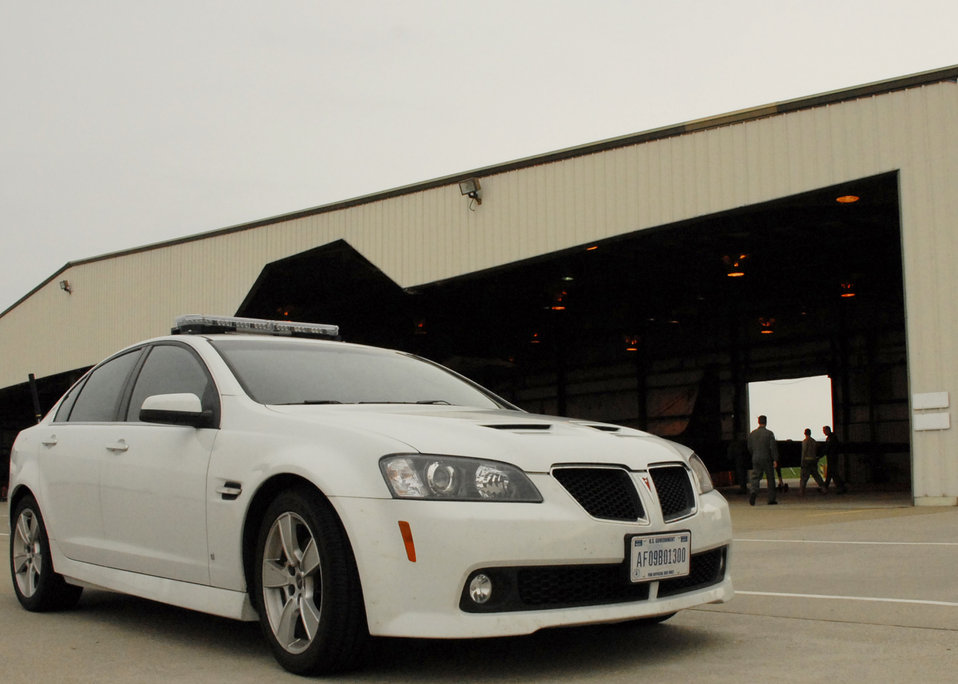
U-2 Chase Car

A chase car for a U-2 reconnaissance aircraft is parked in front of a hangar on the flightline at Beale Air Force Base, Calif. The chase car is driven by a U-2 pilot and provides an extra set of eyes and ears on the ground during routine U-2 flight operations.